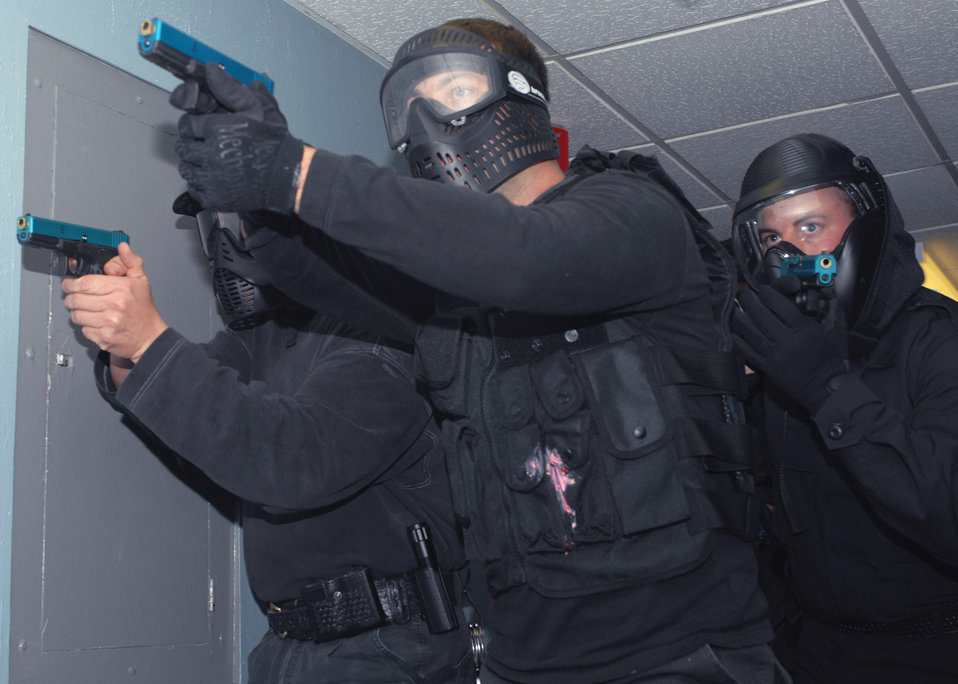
Joint Security Forces Training

Officers from various agencies move in a diamond formation down a hallway, searching for an active shooter as part of a training course May 7 at Cannon Air Force Base, N.M. The three-day Patrol Response to Active Shooter course was taught by National Tactical Officers Association members.